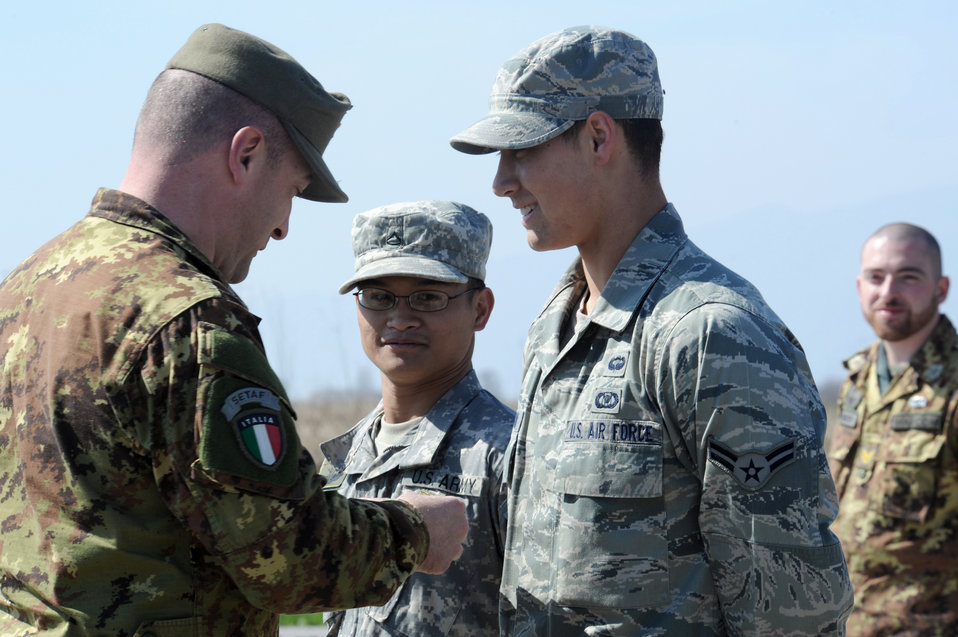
8th Air Support Operations Squadron hosts Jump Week

Airman 1st Class Craig Gabrielson, an 8th Air Support Operation Squadron tactical air control party, was honored by Italian Army Sgt. 1st Class Luca Bertozzo during the closing ceremony of a joint coalition training exercise when the paratrooper presented him with a set of wings March 23, 2011, at Aviano Air Base, Italy.